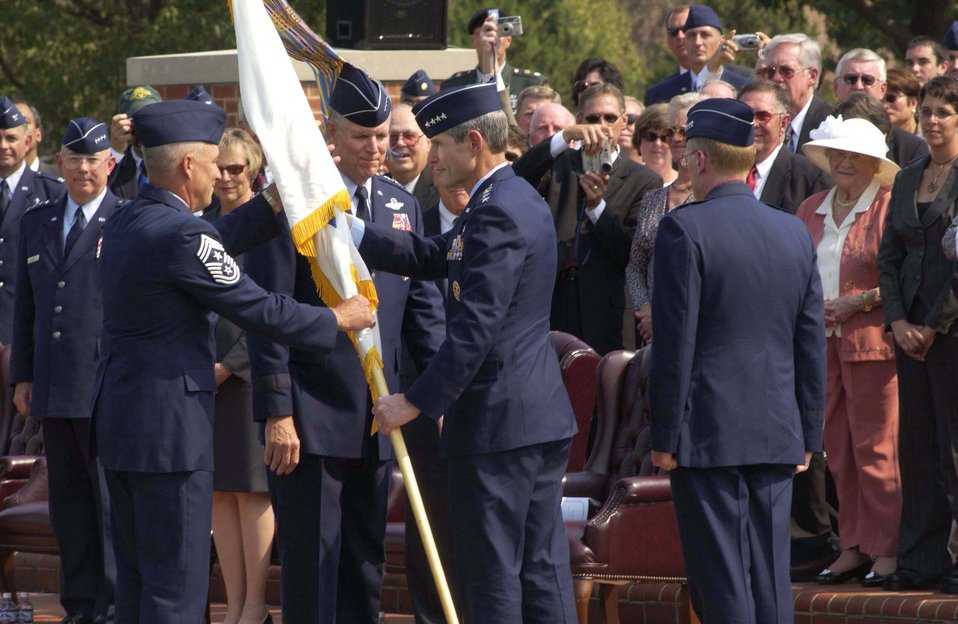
Schwartz takes reins of U.S. Transportation Command

SCOTT AIR FORCE BASE, Ill -- Gen. Norton A. Schwartz assumes command of U.S. Transportation Command and hands off the flag to Chief Master Sgt. Michael Kerver during the TRANSCOM change of command ceremony Sept. 7 here as Joint Chiefs chairman Gen. Richard B. Myers looks on. Chief Kerver is the command chief master sergeant of Air Mobility Command.